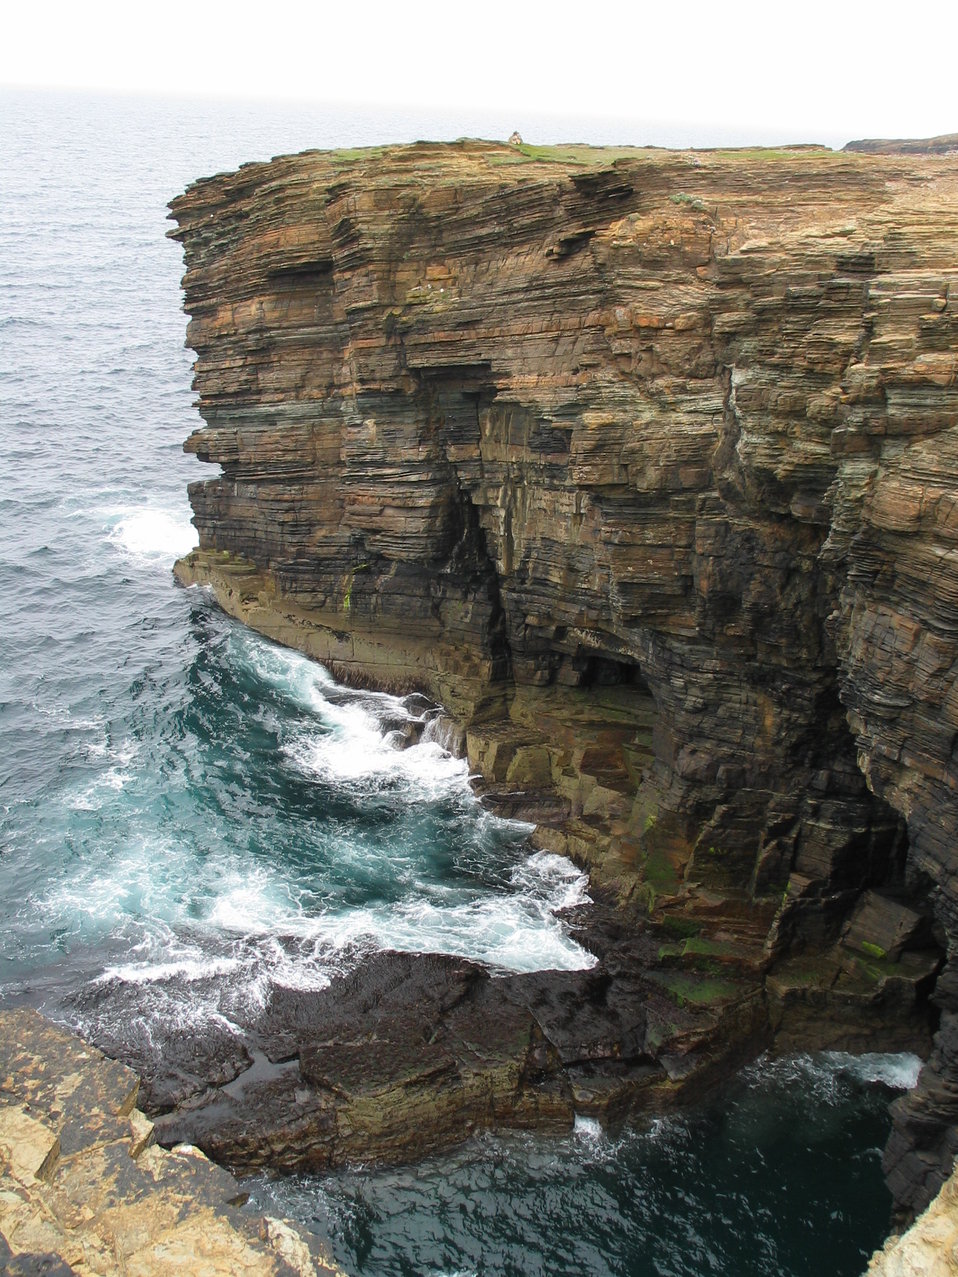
Yesnaby, Orkney, Scotland